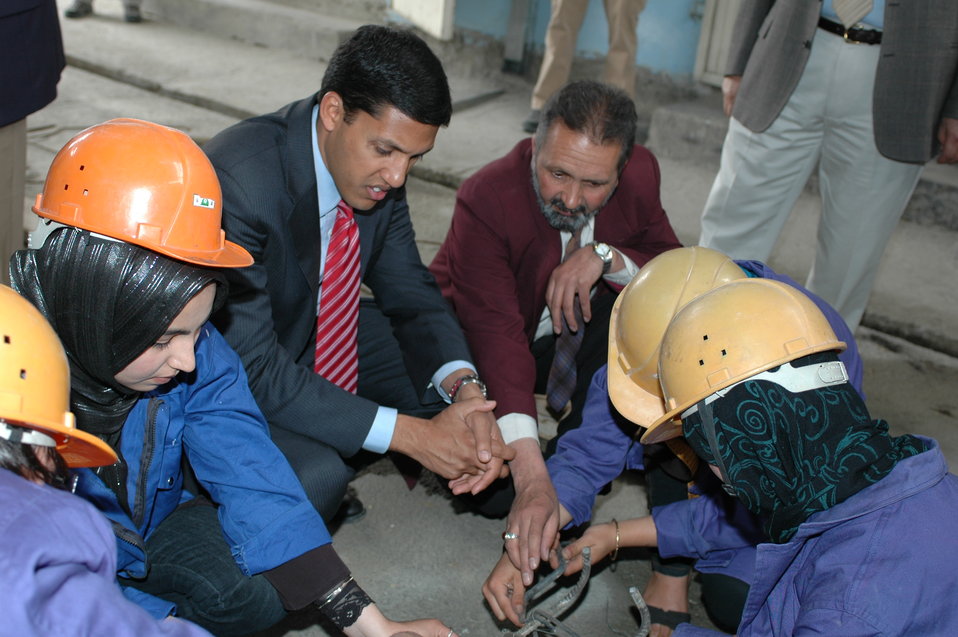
Dr Shah Visits Votech in Kabul